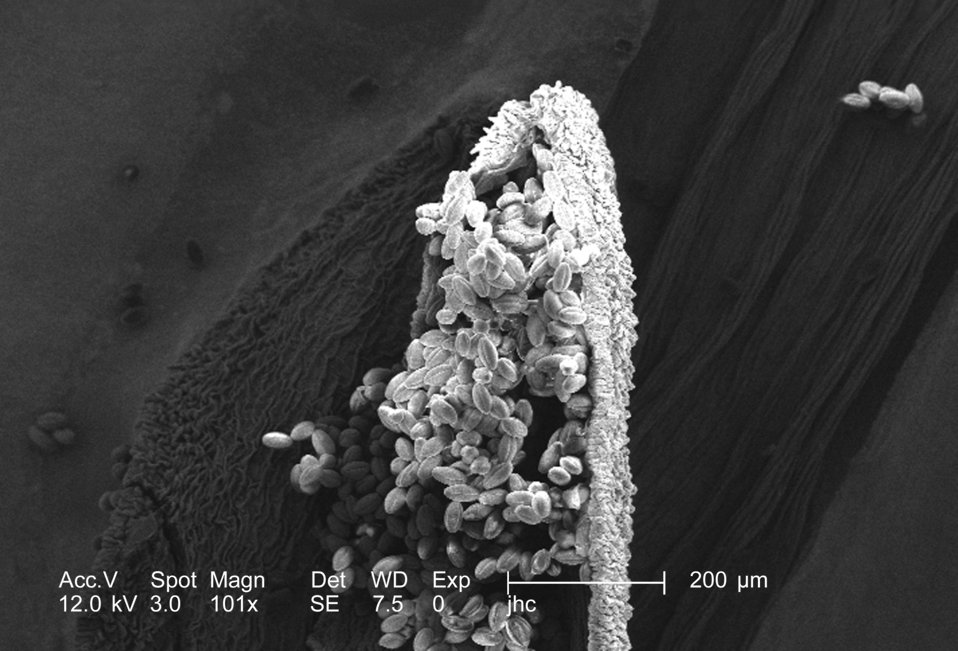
Magnified 101x, this scanning electron micrograph (SEM) revealed some of the morphologic ultrastructure found amongst a collection of pollen found within the dehisced, or split open, anther of a yellow "Fireworks" sundrops, Oenothera fruticosa flower. Note the pod-like configuration of the anther, within which reside many pollen grains ready for dissemination into the passing wind, or to become attached to a pollinator such as a bee.